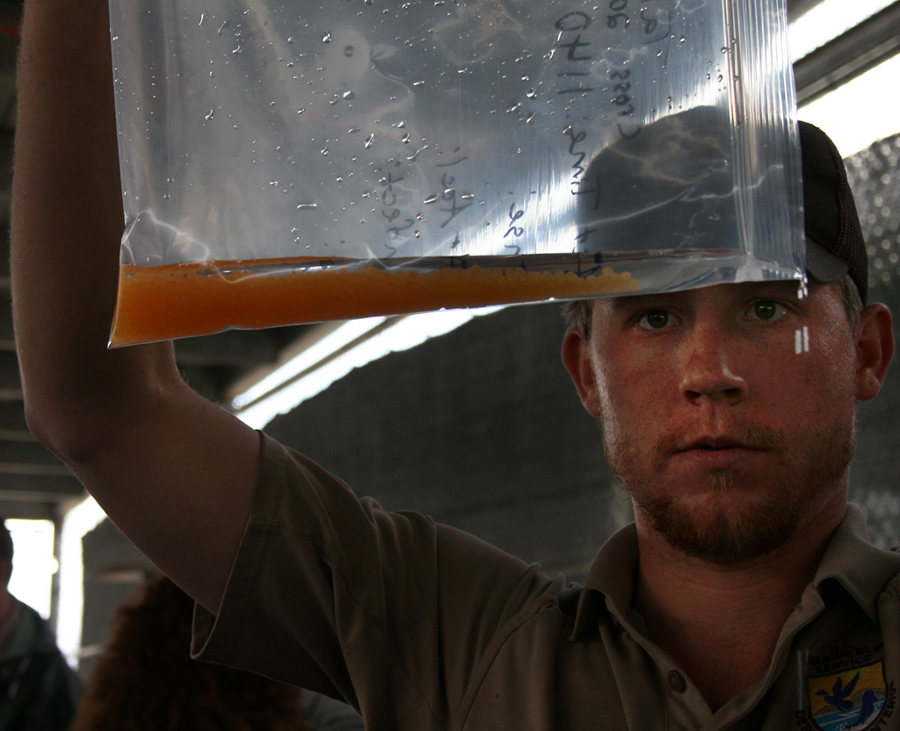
Lahontan cutthroat trout eggs

Evan Anderson removes excess milt from eggs after mixing the two in a ziploc bag. This process allows the biologists at Lahontan NFH to ensure diversity, health, and a wild stock lineage.